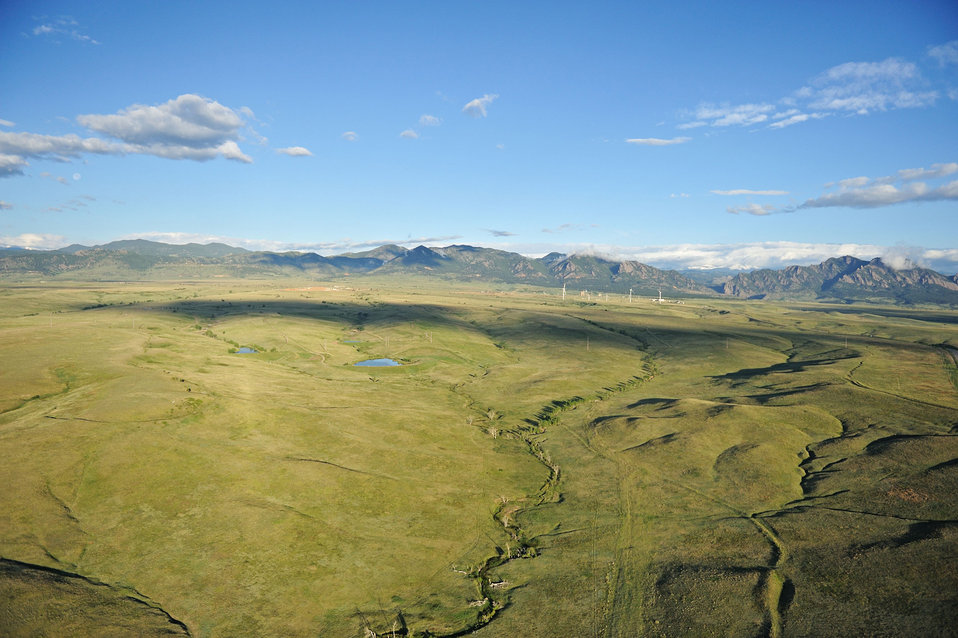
Rocky Flats wildlife refuge

The closed Rocky Flats site can now be used as a wildlife refuge.